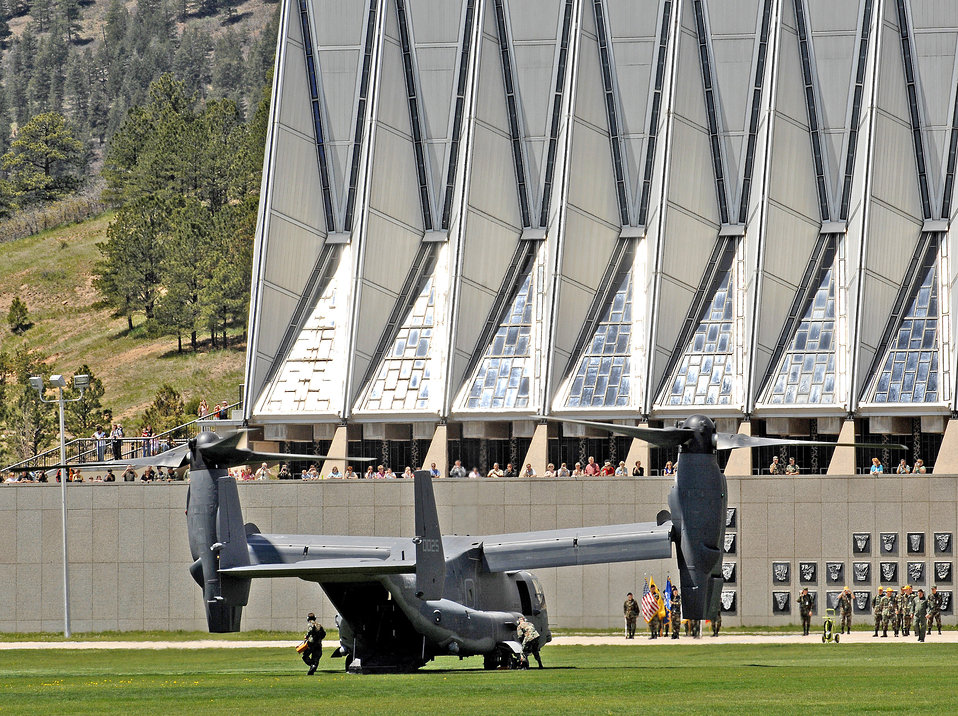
Osprey comes for a visit

Cadets and active-duty troops get a close look at a CV-22 Osprey after it landed at the U.S. Air Force Academy May 11. Cadets in the Department of Aeronautical Engineering's High-Performance Computing Research Center contributed to making this aircraft an operational reality through their research in computational fluid dynamics. The famed Academy chapel is in the background.